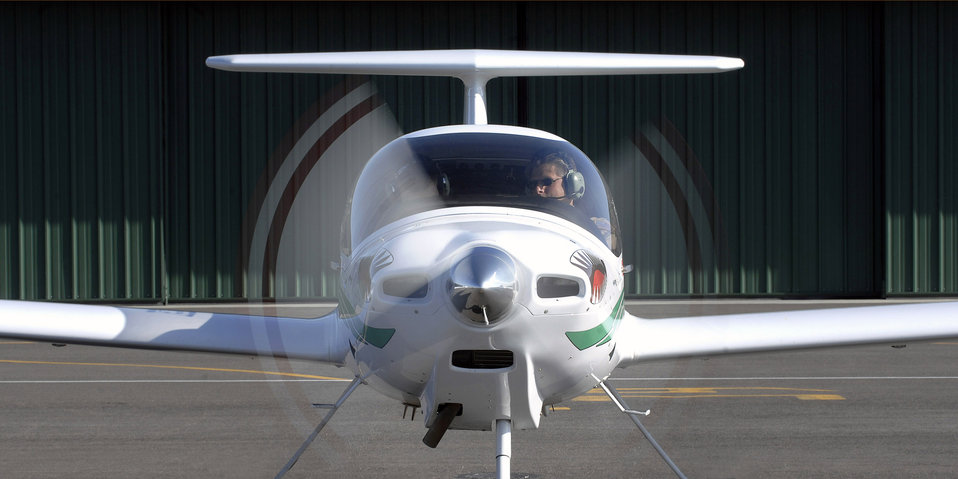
Making a pilot

Student pilot 2nd Lt. Brandon Magnuson lands a DA-20 aircraft after performing his first solo flight with instructor pilot Greg Dotter April 7 in Pueblo, Colo. Lieutenant Magnuson is attending the Doss Aviation Initial Flight Screening Course. The course is used to screen Air Force aviation candidates and develop student's aviation skills.